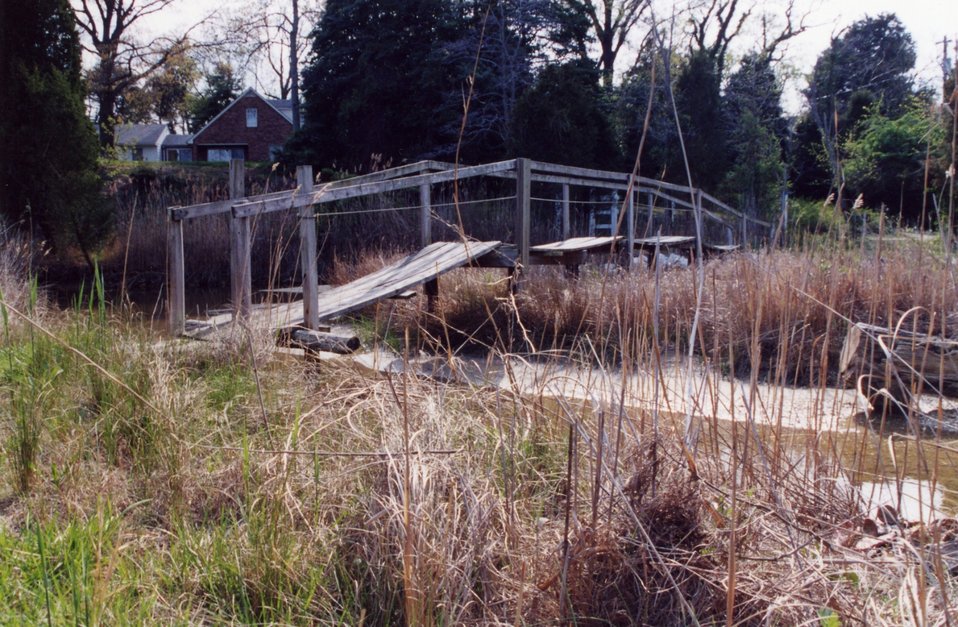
A footbridge crossing a small tidal creek.